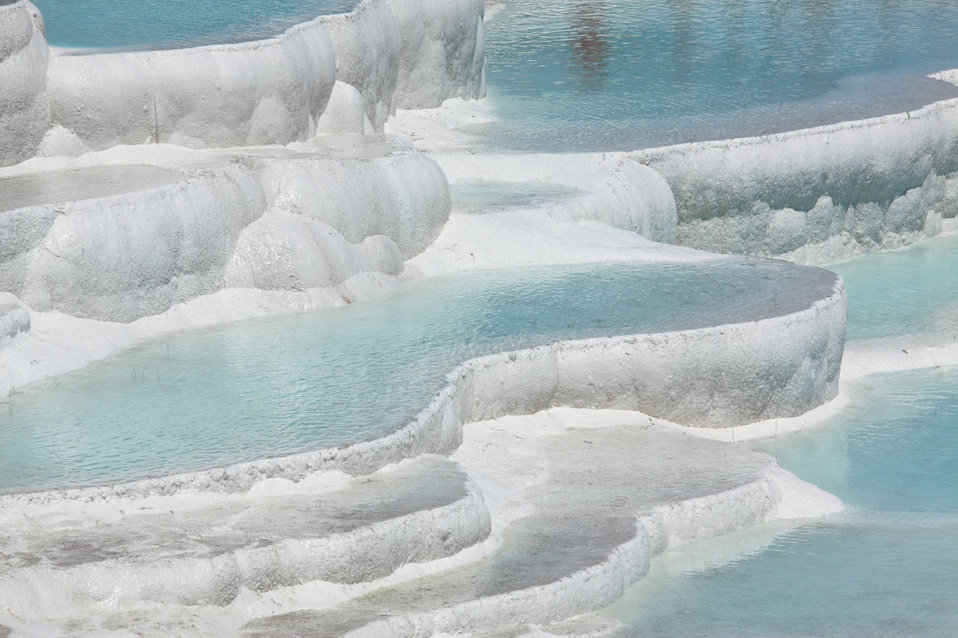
Pamukkale background

Pamukkale travertine background image in turkey.